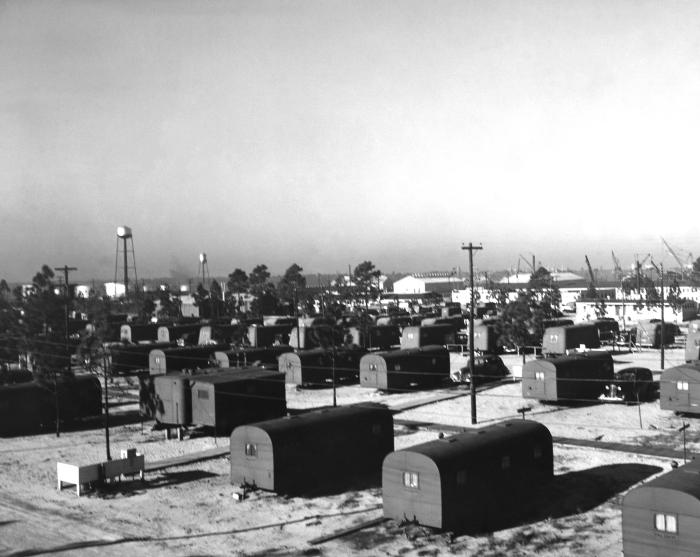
Provided by the Center for Disease Control's (CDC), National Institute for Occupational Safety and Health (NIOSH), this historic 1943 image depicted an aerial view of a North Carolina workcamp trailer park, which was located onsite at an industrial workplace.